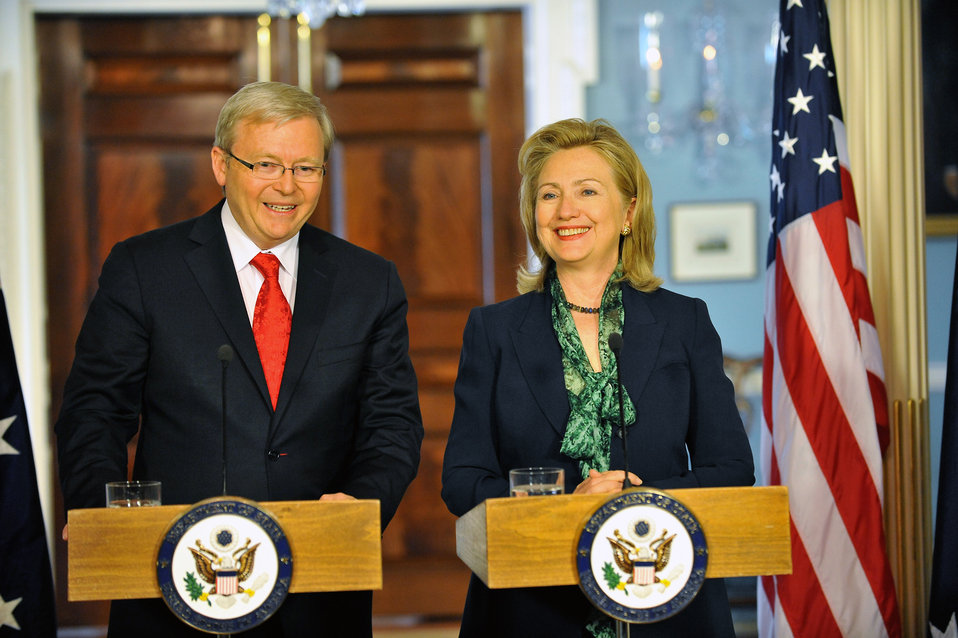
Secretary Clinton and Australian Foreign Minister Rudd Deliver Remarks

U.S. Secretary of State Hillary Rodham Clinton and Australian Foreign Minister Kevin Rudd hold a joint press conference after their bilateral meeting, at the U.S. Department of State in Washington, D.C., on May 2, 2011.